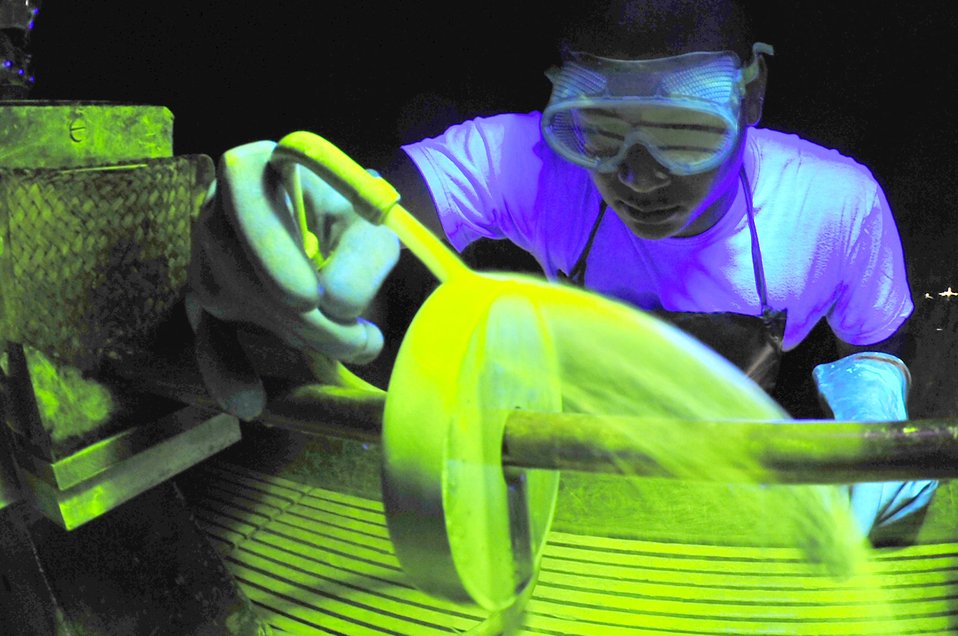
It's good to be green

Airman 1st Class Marvin Moss looks for surface defects under a black light Aug. 26, 2009, at Eielson Air Force Base, Alaska. The black light causes particles which are unseen to the human eye to become fluorescent. Airman Moss is a non-destructive inspection journeyman assigned to the 354th Maintenance Squadron.